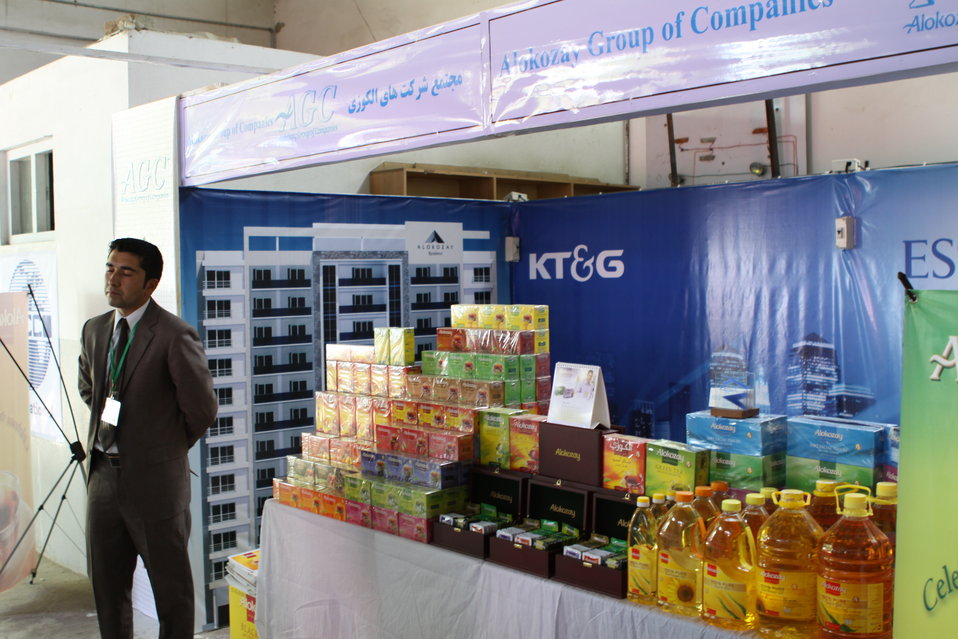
100522 ATVI Graduation 080